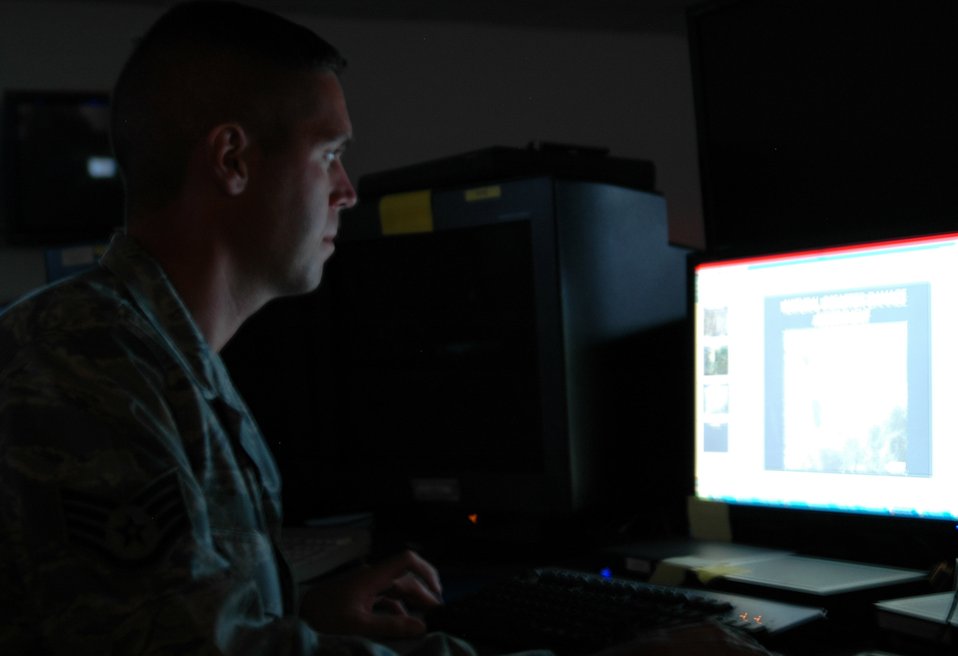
Intelligence Wing supports Gustav efforts

Staff Sgt. Joshua Orr, an imagery analyst with the 30th Intelligence Squadron at Langley Air Force Base, Va., reviews previous damage assessments from Hurricane Katrina between contingency taskings from Central Command. Officials at the 9th Reconnaissance Wing at Beale AFB, Calif., are shifting their CENTCOM taskings to the 30th IS so they can assist with Hurricane Gustav.